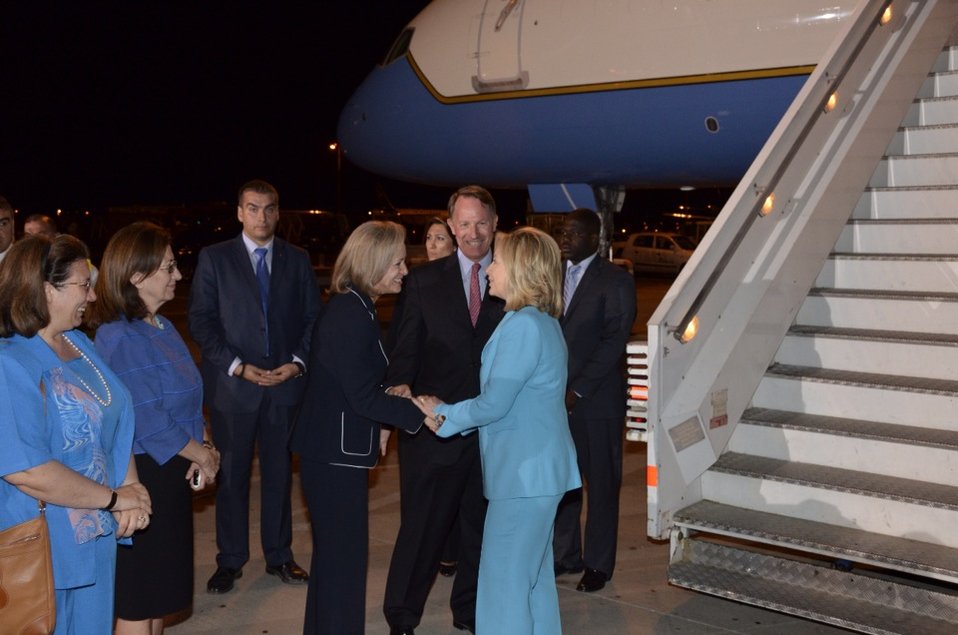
Secretary Clinton Is Greeted By Ambassador Smith and Mrs. Smith

U.S. Secretary of State Hillary Rodham Clinton is greeted by U.S. Ambassador to Greece Daniel Bennett Smith, right, and Mrs. Smith, shaking the Secretary's hand, upon her arrival to Athens, Greece, on July 16, 2011.